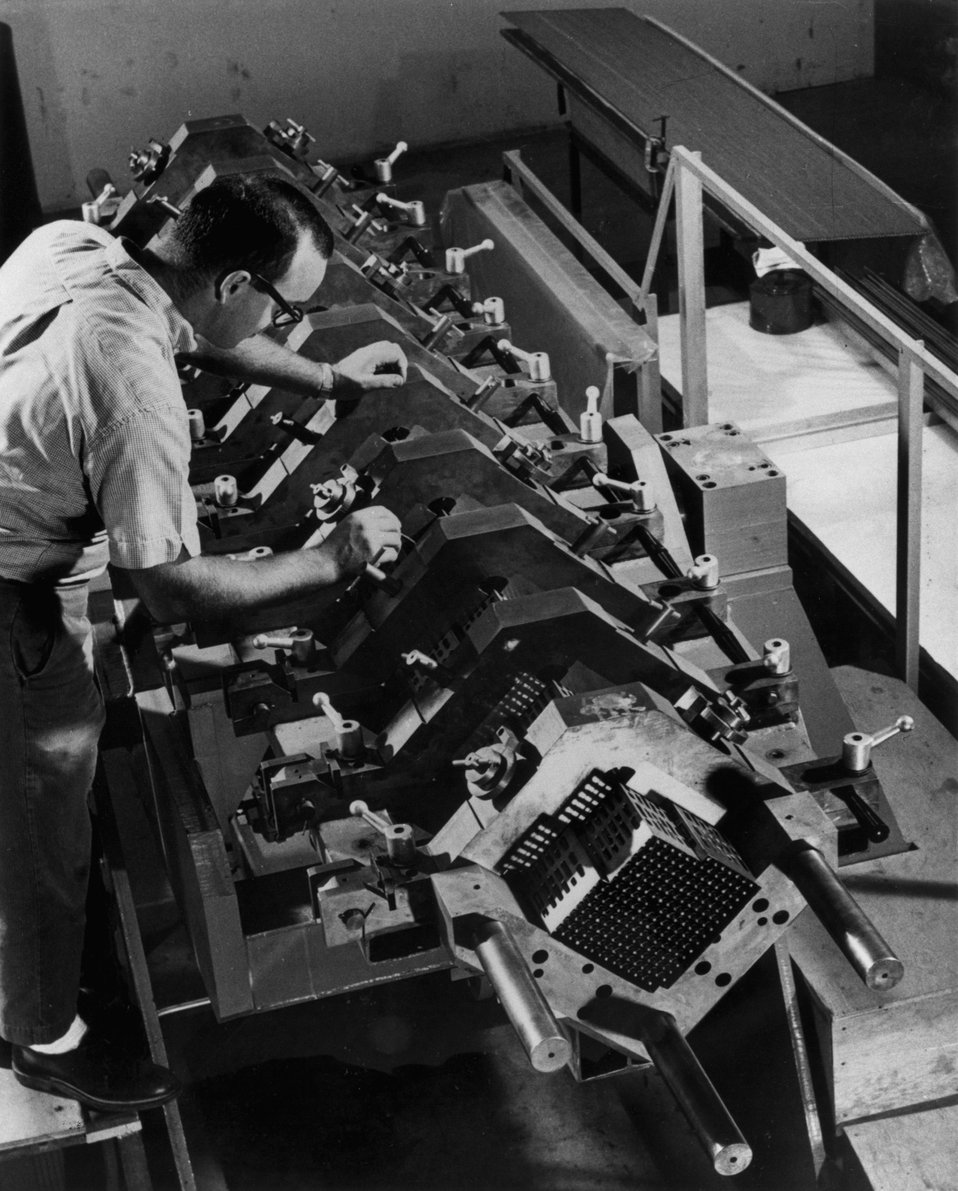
When the finished fuel pellets are loaded into cladding tubes they are end capped. c. 1964